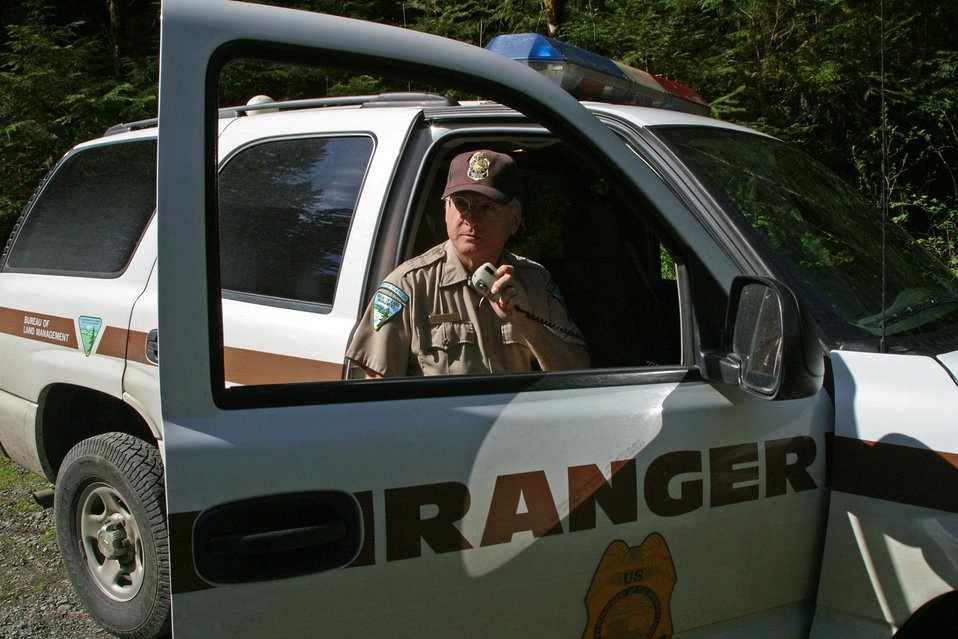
Dennis Daraghy, BLM Salem District Ranger checks in with the District Office.